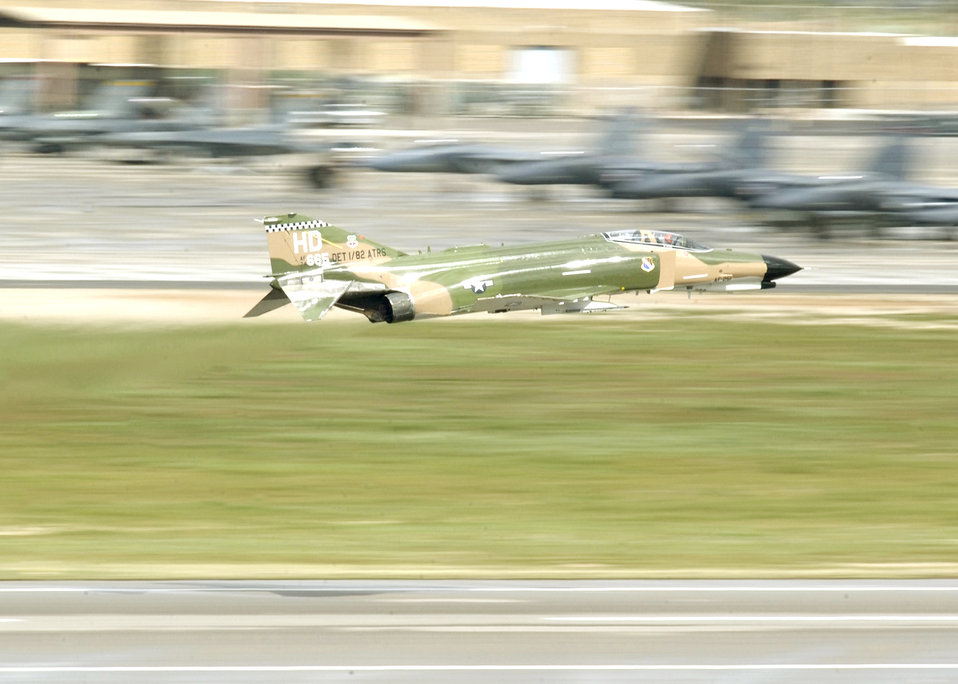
Cleared for takeoff

DAVIS-MONTHAN AIR FORCE BASE, Ariz. -- An F-4 Phantom II takes off while participating in the 2005 Heritage Flight Conference here. The Heritage Flight program was established in 1997 supporting the Air Force's 50th anniversary. It involves today's state-of-the-art fighters flying in close formation with World War II and Korean War vintage fighters. The flight is designed to safely display the evolution of U.S. Air Force airpower and support Air Force's recruiting and retention efforts.